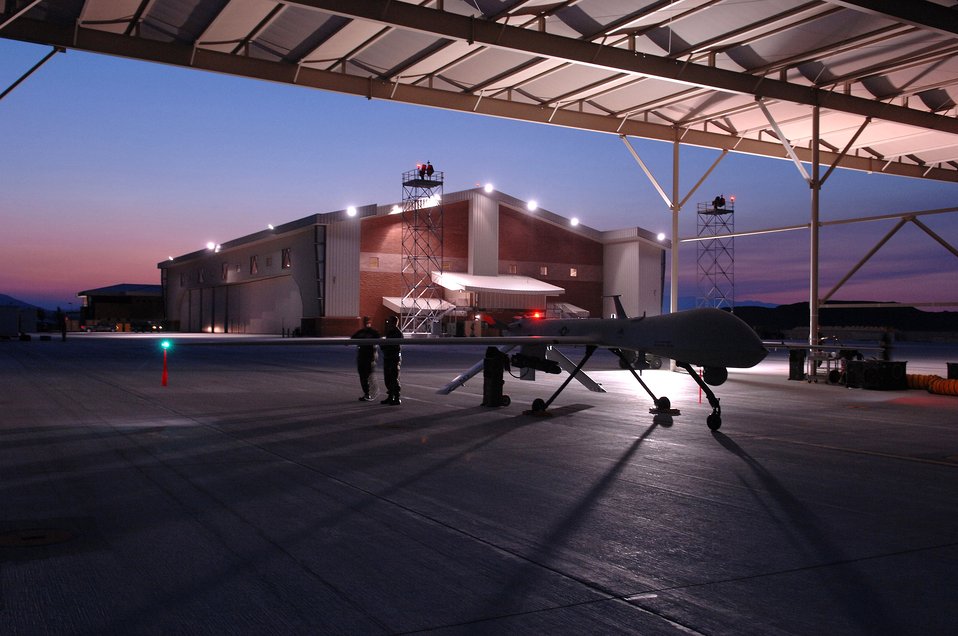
Ready to go

Air Force maintainers preflight an MQ-1 Predator unmanned aerial vehicle Sept. 7 at Creech Air Force Base, Nev.